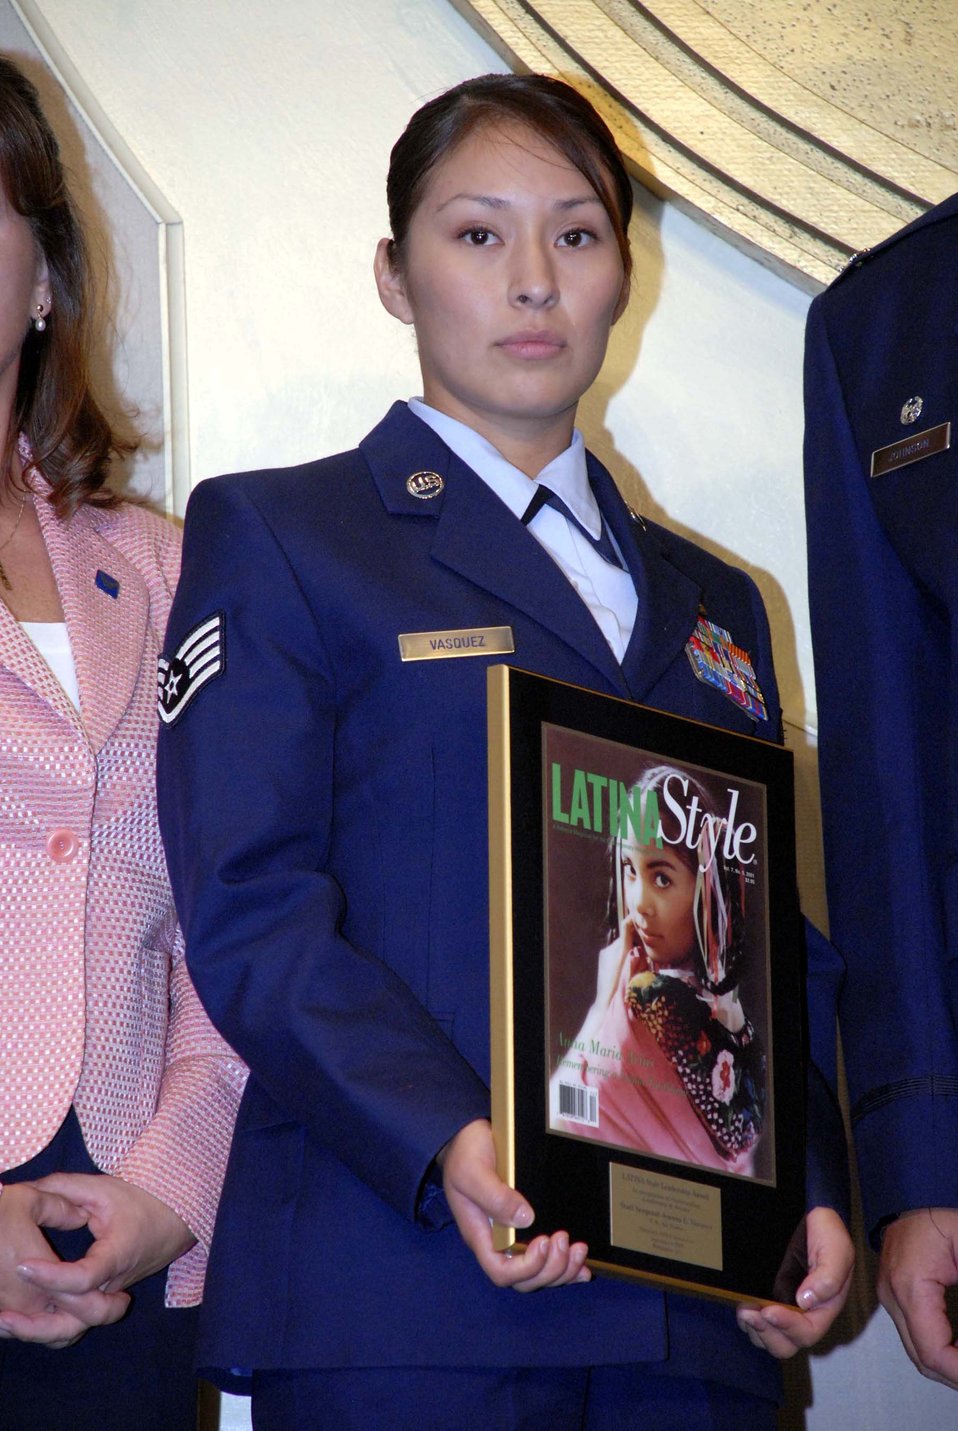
Hispanic Heritage Month: NCO earns awards for war effort

Staff Sgt. Joanna Vasquez receives a LATINA Style Award Sept. 5 in Washington, D.C., for her actions in Iraq last year. An improvised explosive devise struck a Humvee behind the vehicle she was in, eventually killing four Soldiers providing security escort. Sergeant Vasquez used her combat lifesaver training to try and save the life of a wounded Soldier. She also used her Arabic language skills to question local Iraqis on whom may have place the IED. Sergeant Vasquez is assigned to the 31st Intelligence Squadron at Fort Gordon, Ga.